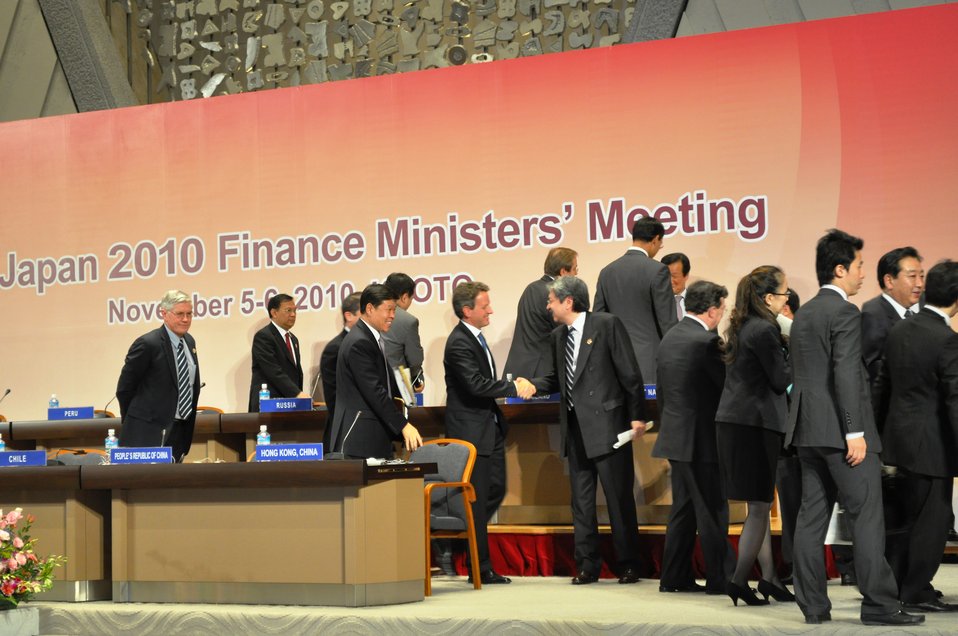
Geithner visit to Asia, November 4-12, 2010

Secretary Geithner at the conclusion of the Asia-Pacific Economic Cooperation (APEC) Meeting of Finance Ministers in Kyoto, Japan.